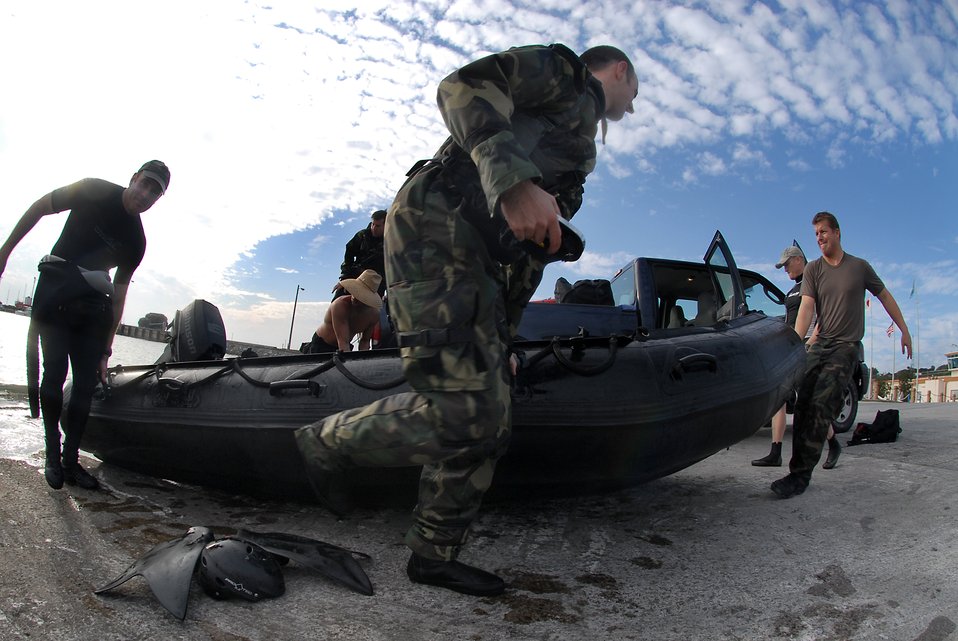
Combat Rescue

Pararescuemen from the 31st Rescue Squadron on Kadena Air Base, Japan, carry a F470 Zodiac boat from the water used to pick up fellow pararescuemen Jan. 16.